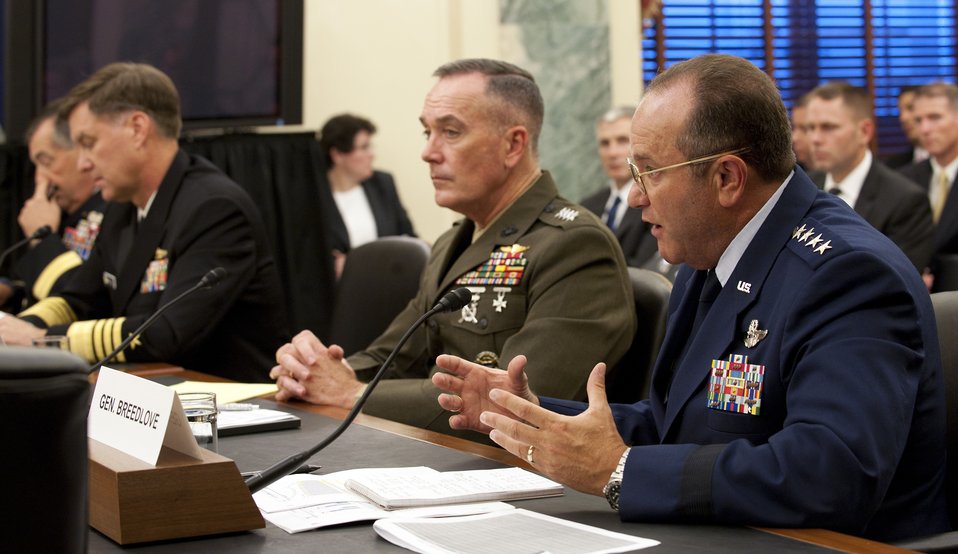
Air Force vice chief testifies on GO, SES numbers

Air Force Vice Chief of Staff Gen. Phil Breedlove (right) answers a question about general officer and senior executive service authorizations in the military Sept. 14, 2011, in Washington, D.C., during a hearing of the Senate Armed Services Committee's Subcommittee on Personnel. Also pictured (from left) Army Vice Chief of Staff Gen. Peter Chiarelli, Vice Chief of Naval Operations Adm. Mark Ferguson III and Assistant Commandant of the Marine Corps Gen. Joseph Dunford, Jr.